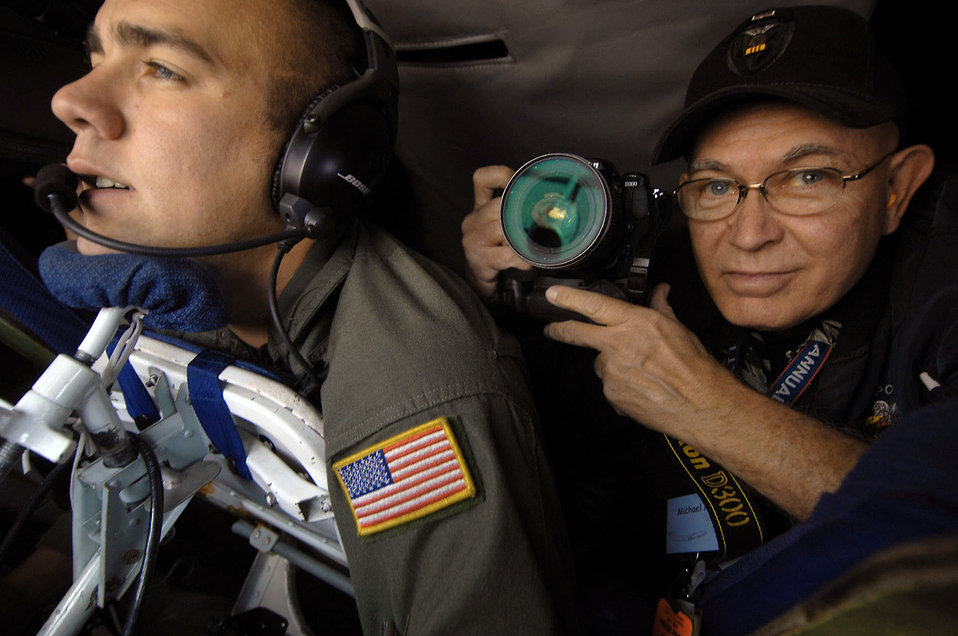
Lights, camera, Air Force Week

Mike Mullen (right) photographs Senior Airman Terry Mossbarger during an aerial refueling mission aboard a KC-135 Stratotanker Nov. 12 out of March Air Reserve Base, Calif. Airman Mossbarger is a boom operator from the 336th Air Refueling Squadron. Mr. Mullen is from the San Gabriel Valley Newspaper Group.